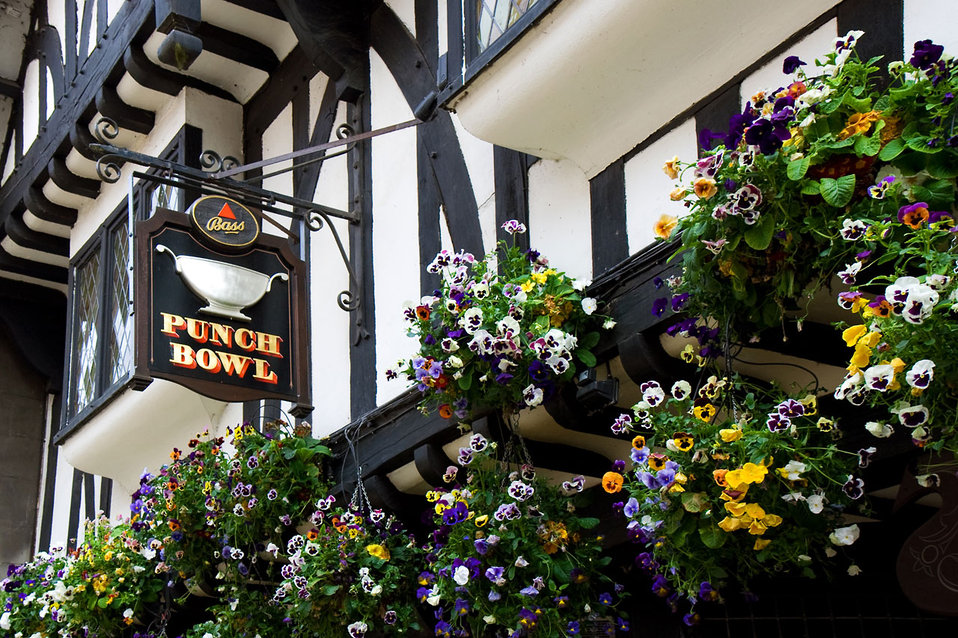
Nice old building

A detailed picture of an old house in york.